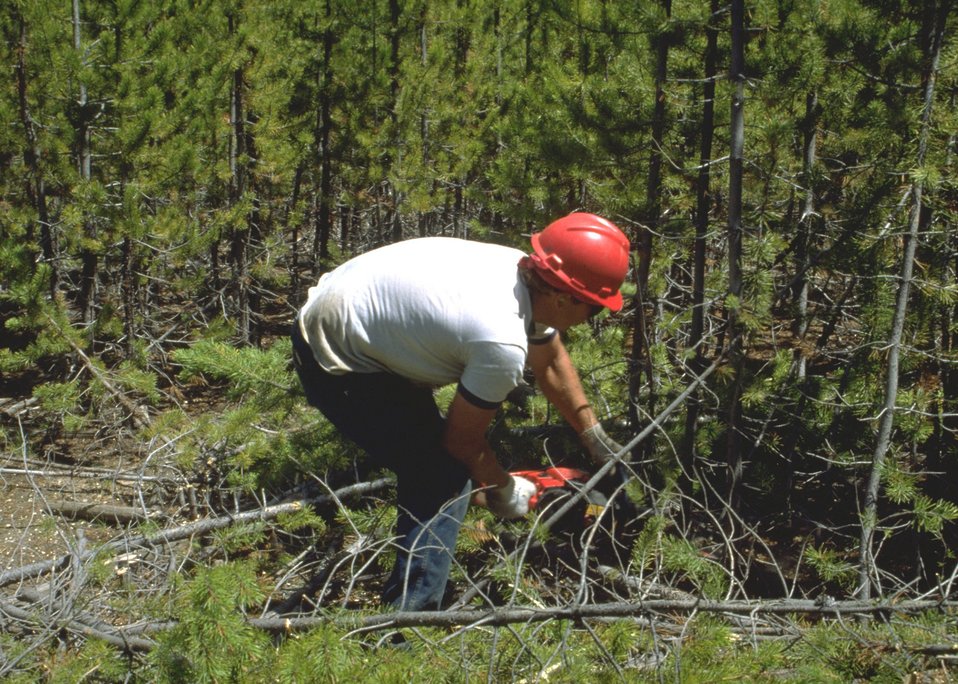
Removal of thick brush.